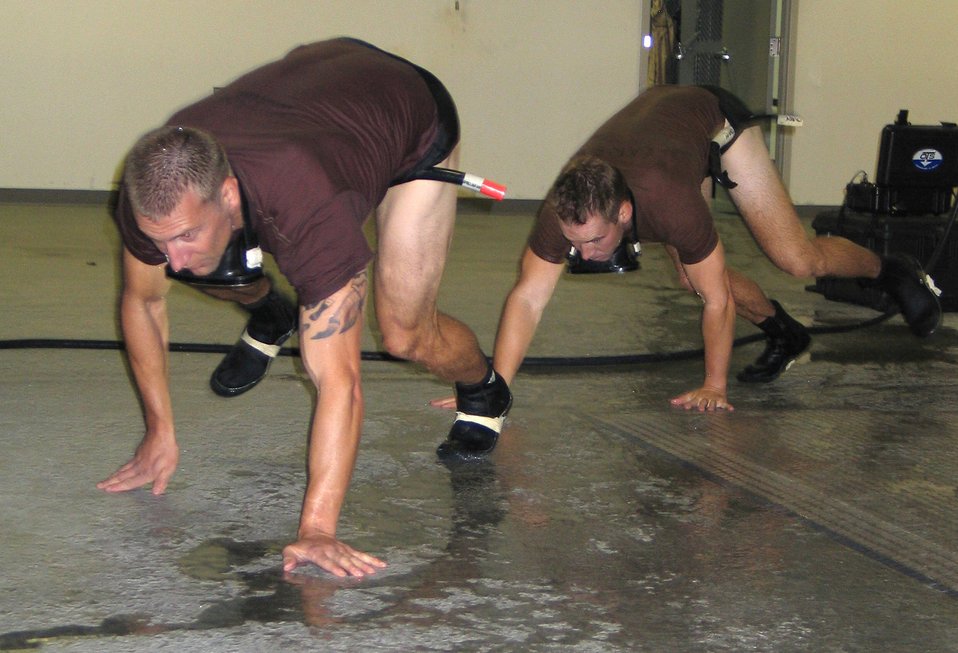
Combat rescue officers ready for field

Lt. Cody Atchinson (front), and Navy Ensign Brian Carey bear-crawl around the pool at Fairchild Air Force Base, Wash., Oct. 24 during the water confidence portion of the combat rescue officer selection program. During water confidence as in other evaluation segments as well, CRO candidates test and train their teamwork, endurance and leadership skills.